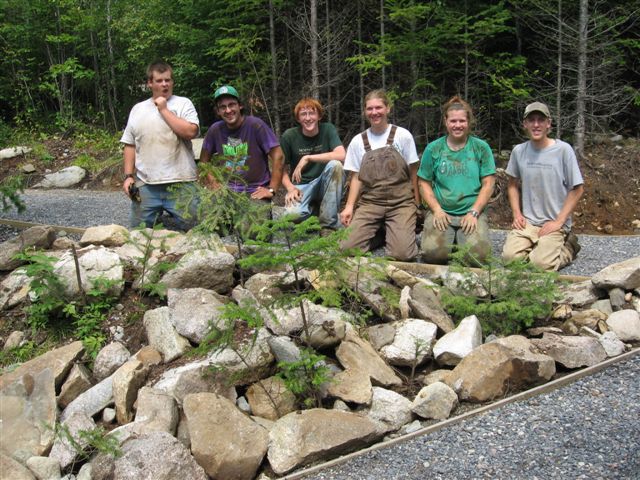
YCC on Mud Pond Trail

The YCC crew Silvio O. Conte National Fish and Wildlife Refuge poses on the Mud Pond trail at the refuge's Pondicherry division. The crew helped to construct the trail.